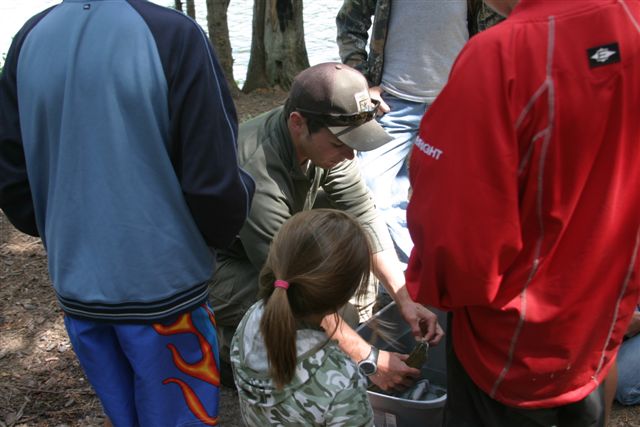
Creston National Fish Hatchery provides many educational opportunities for area schools and families.